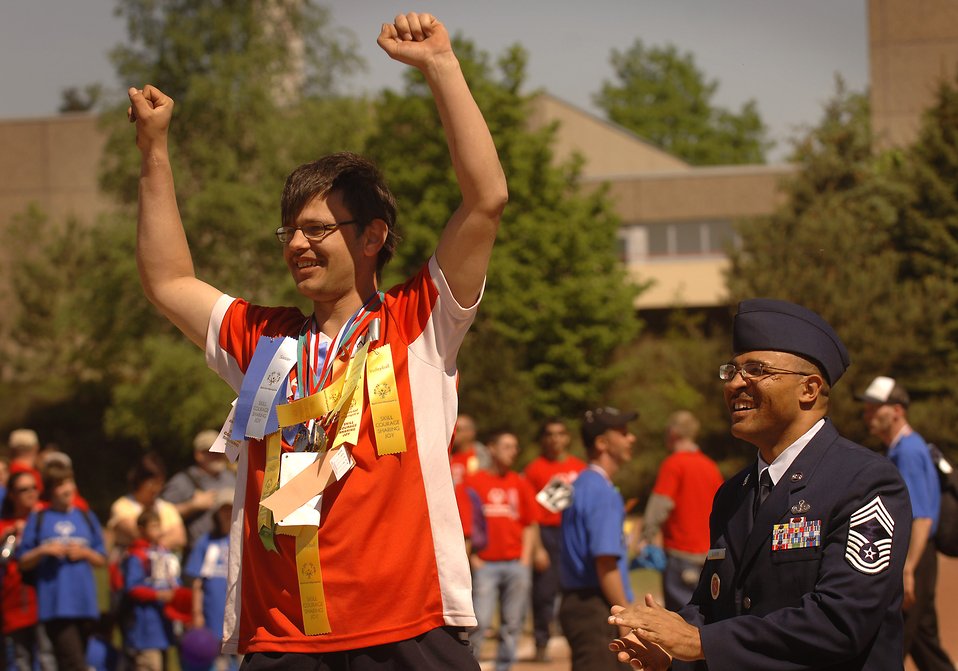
Airmen make olympics special

Willi Kastner of Darmstadt acknowledges recognition for first place in the badminton competition for the 2007 Special Olympic Games May 2 in Enkenbach-Alsenborn, Germany. Pinning on the ribbon, Chief Master Sgt. Lonnie Slater, commandant of the Kissling NCO Academy, was one of several hundred German and American volunteers from the Kaiserslautern military community who assisted more than 750 Special Olympians who competed in the 24th annual games here.